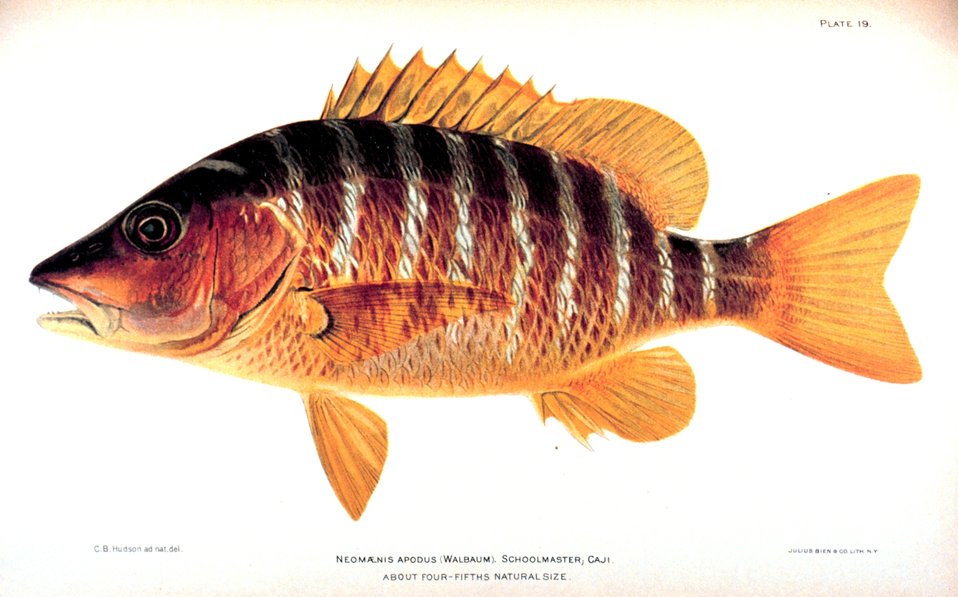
Neomaensis apodus (Walbaum). Schoolmaster; Caji. In: 'The Fishes of Porto Rico', by Barton Warren Evermann and Millard Caleb Marsh. Bulletin of the United States Fish Commission, Vol. XX for 1900. First Part. P. 350, Plate 19.